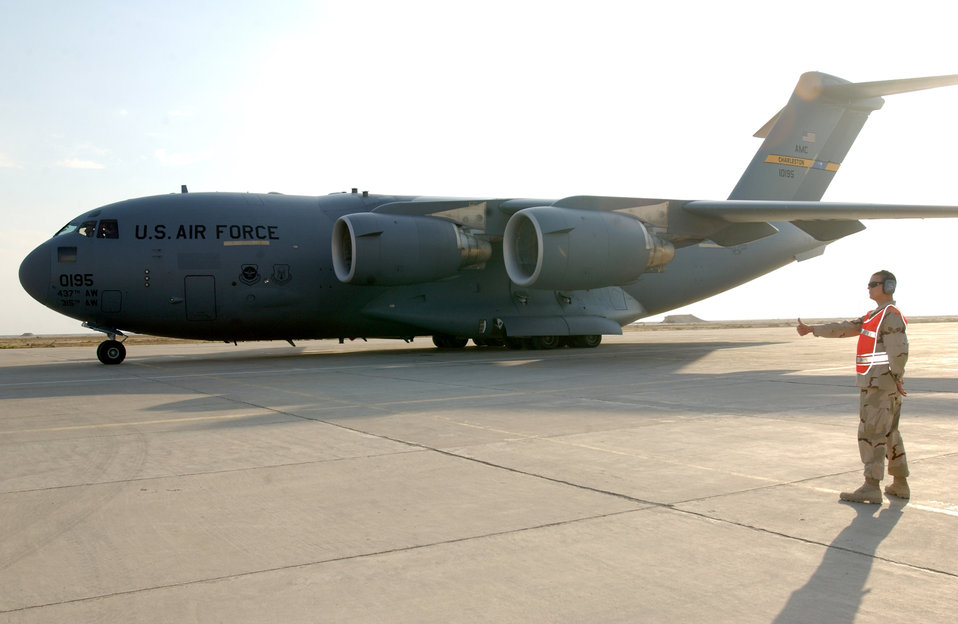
One thumb up

TALLIL AIR BASE, Iraq -- Senior Airman Karl Stenske gives a thumbs up as he marshals in a C-17 Globemaster III carrying Gen. Richard B. Myers as he arrives here April 14. General Myers is the chairman of the Joint Chiefs of Staff and Airman Stenske is a crew chief with the 407th Expeditionary Operations Support Squadron here.